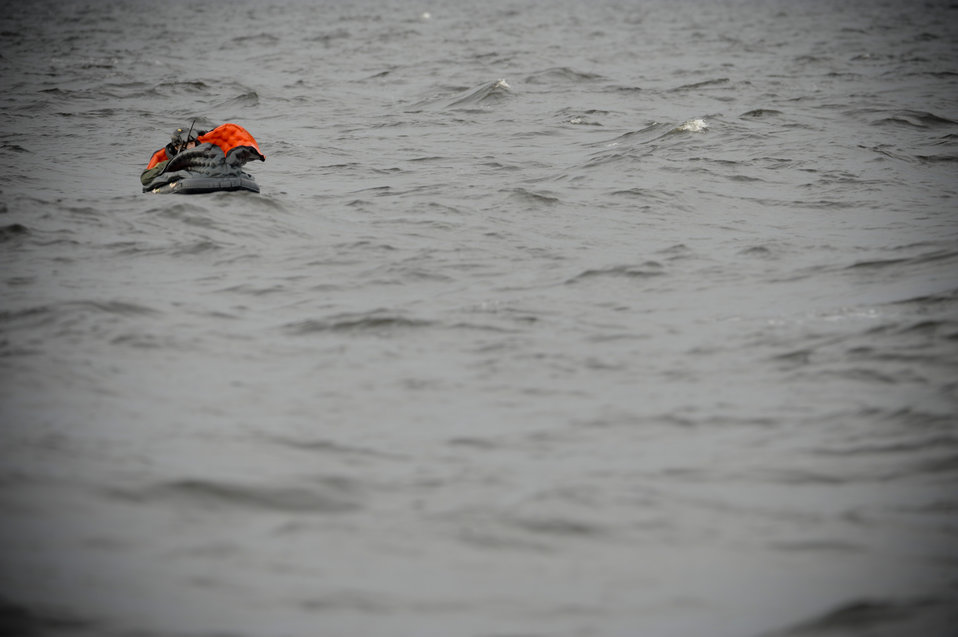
Water rescue

Airman 1st Class Taras Ivaniuk plays the role of a downed pilot during water rescue training in the Gulf of Mexico on Aug. 14, 2012. The exercise tested 347th Rescue Group members' ability to locate and rescue downed personnel in open water. Ivaniuk is a 38th Rescue Squadron pararescueman from Moody Air Force Base, Ga.